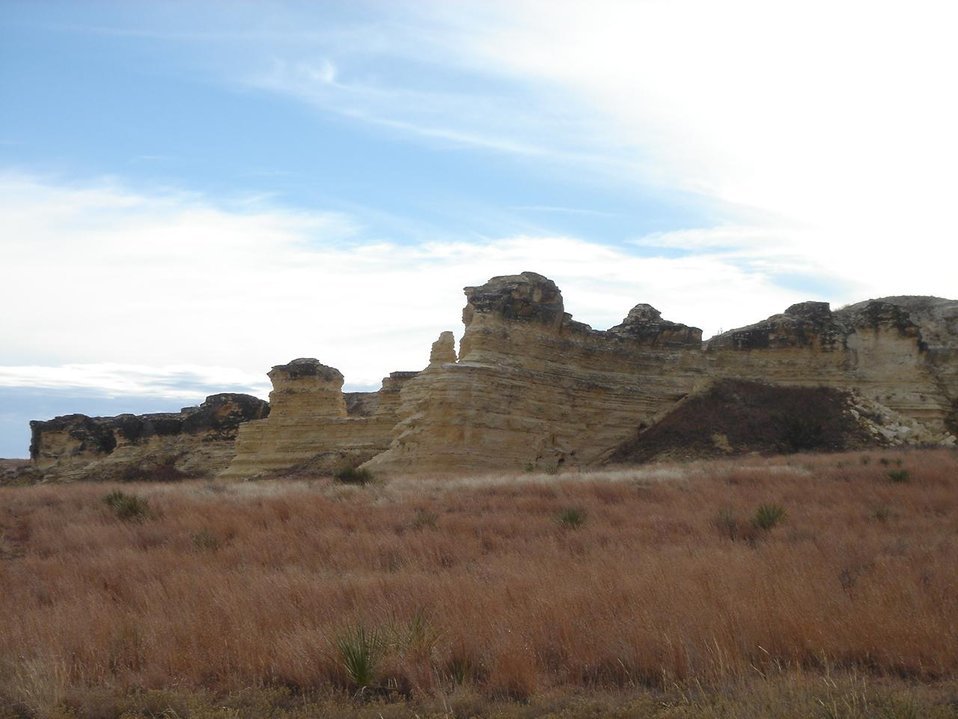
badlands near Castle Rock
Category:Images of Kansas